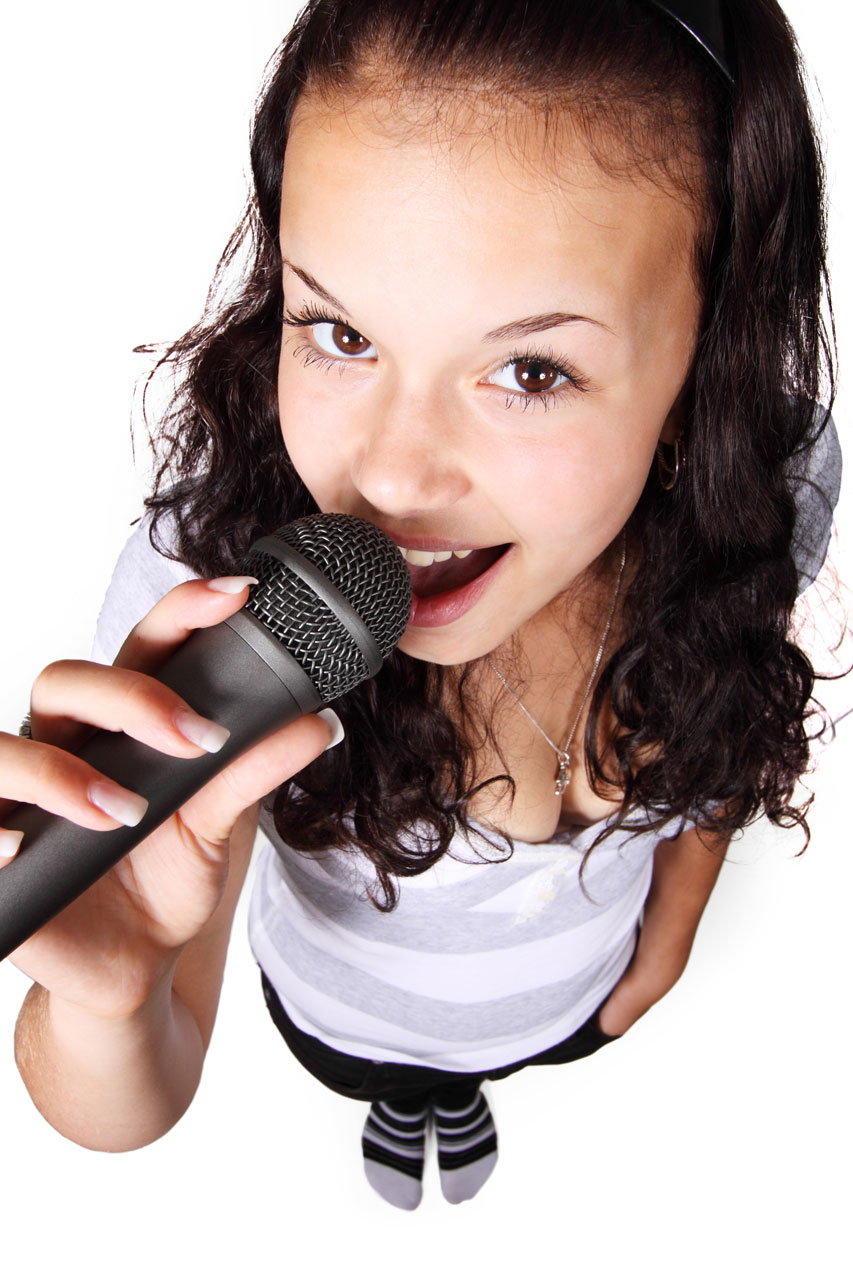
Girl with microphone

Young woman singing with microphone.